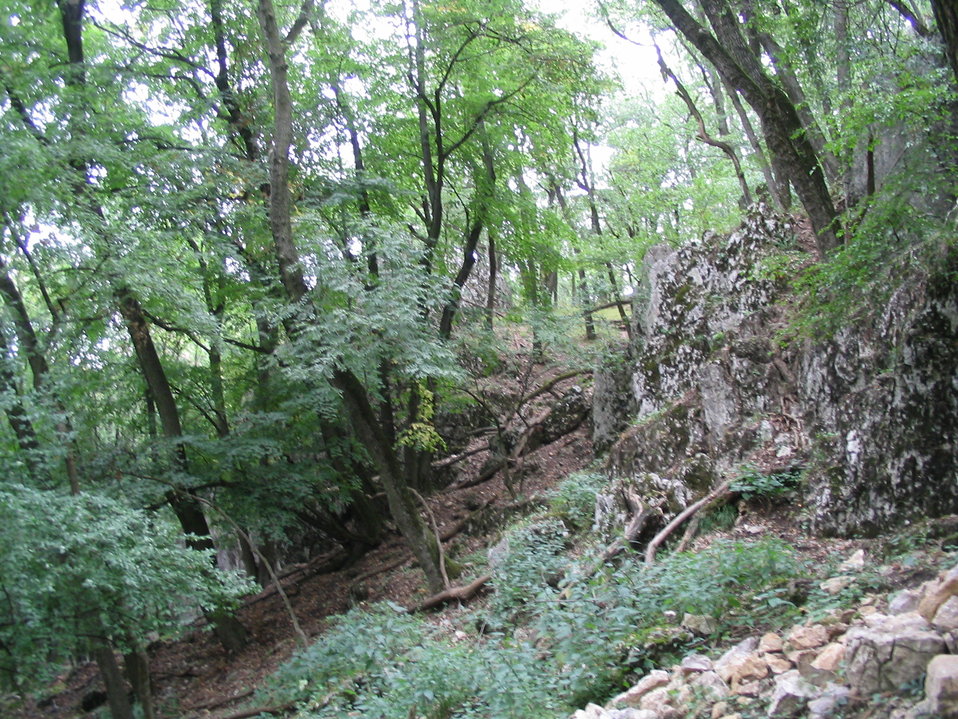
Forest in Gerecse Mountains Deutsch: Wald im Gerecse-Gebirge Magyar: Erdő Gerecsében